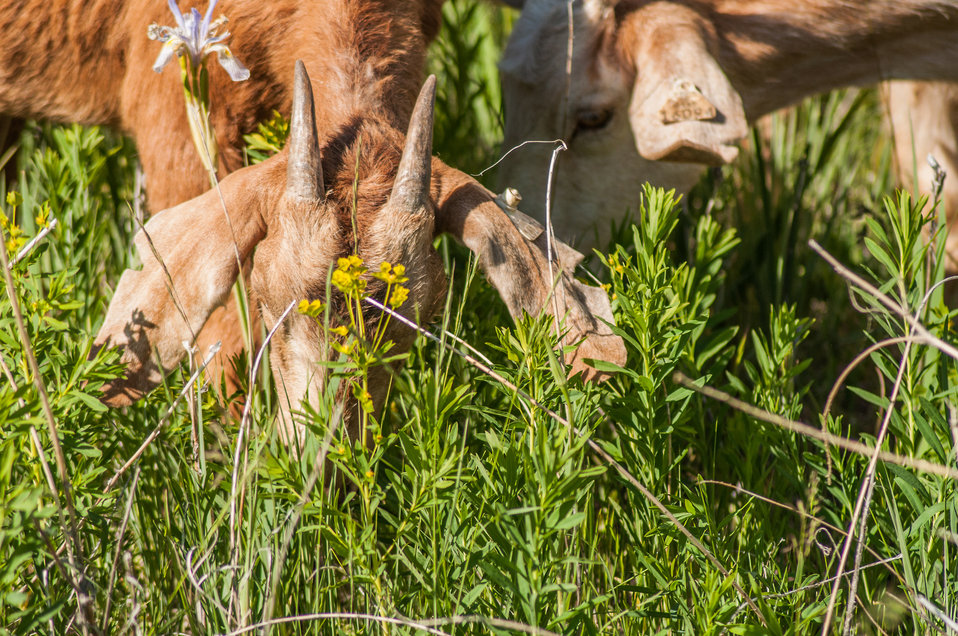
Goat landing on Bozeman Fish Technology Center

On June 8 at 5:00 p.m., 409 yearling domestic goats were off-loaded on the Bozeman Fish Technology Center (BFTC) campus. Thus begins a 3-4 year project of monitored targeted grazing and applications of friendly insects to control noxious weeds and manage brush overgrowth on property of the U.S. Fish and Wildlife Service BFTC.

Purposes of this effort are to reduce the presence of undesirable vegetation, promote restoration of native plants, and assist with fire protection by reducing burnable plant biomass.

The cooperative venture involves the U.S. Fish and Wildlife Service, Montana Outdoor Science School, Friends of the Bozeman Fish Technology Center, Gallatin Valley Land Trust, U.S. Forest Service, and Prescriptive Livestock Services. Integrated Weed Control is supplying the insects as an in-kind contribution to the project, and has applied insects on the BFTC’s 'hot spots' in previous years.